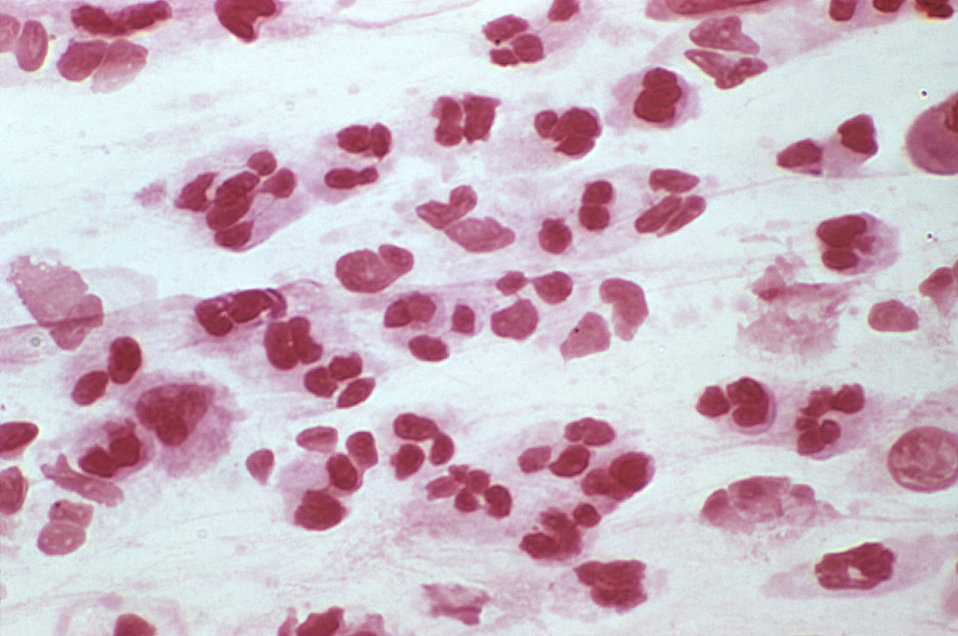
This is a photomicrograph of a Gram-stained urethral exudate sample from a male who presented with a case of urethritis. In this particular view, numbers of polymorphonuclear leukocytes (PMNs) were visible, however, no organisms were evident. This specimen proved to be negative for the presence of Gram-negative Neisseria gonorrhoeae bacteria.